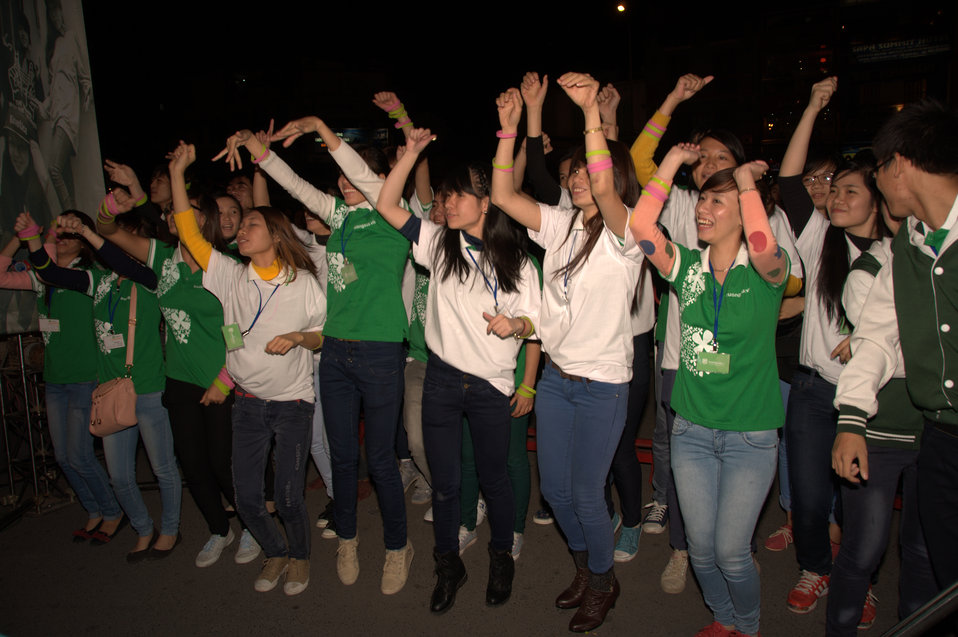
USAID and PEPFAR supports an outdoor concert to promote Vietnam's national action month for HIV

Hanoi, December 18, 2012.